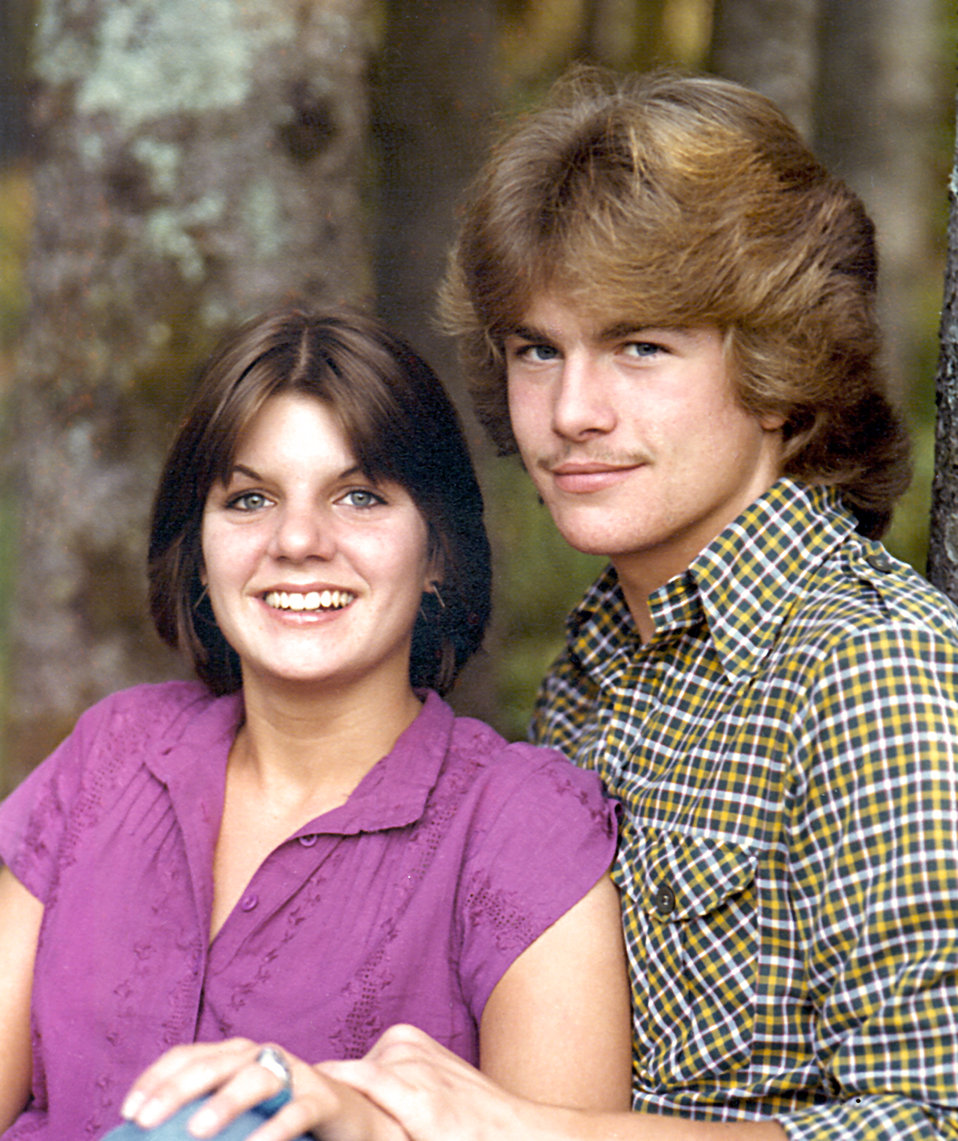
Two chiefs, one marriage, love for Air Force

LIMESTONE, Maine -- Before graduation from high school, Roger and Lisa Sirois were voted class couple of 1980. Now, the two are chief master sergeants at Hanscom Air Force Base, Mass. They married after high school and then joined the Air Force together.